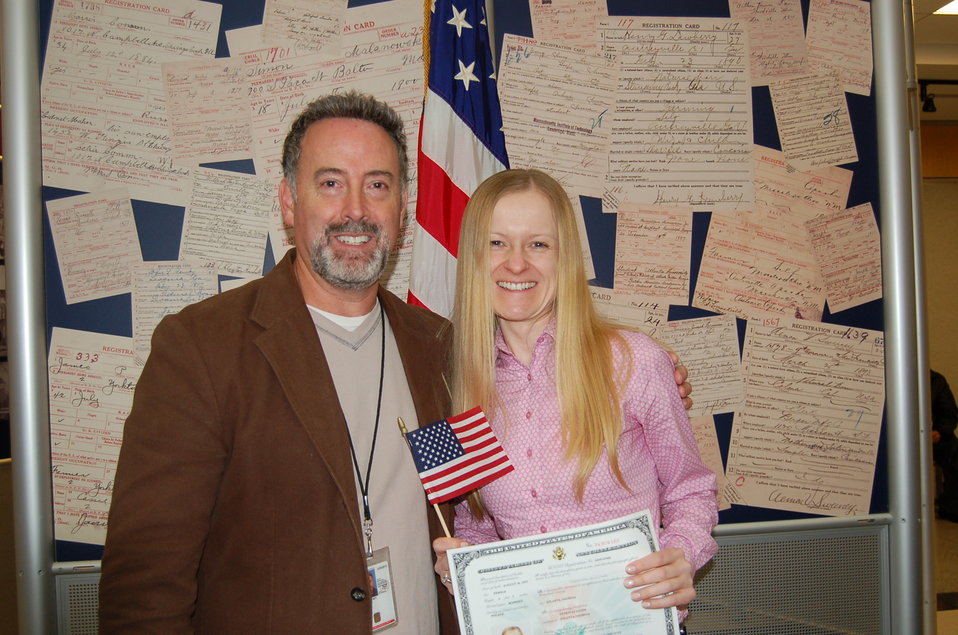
New Citizens